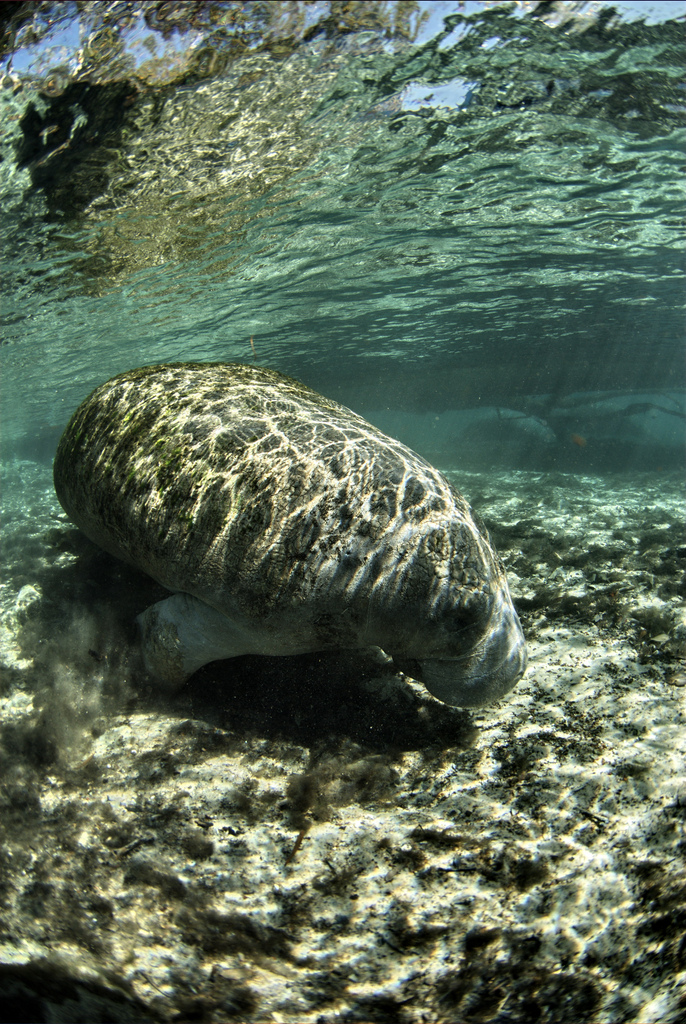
Endangered Florida manatee (Trichechus manatus)

Photo credit: David Hinkel

The Crystal River National Wildlife Refuge, was established in 1983 specifically for the protection of the endangered West Indian Manatee. This unique refuge preserves the last unspoiled and undeveloped habitat in Kings Bay, which forms the headwaters of the Crystal River. The refuge preserves the warm water spring havens, which provide critical habitat for the manatee populations that migrate here each winter.